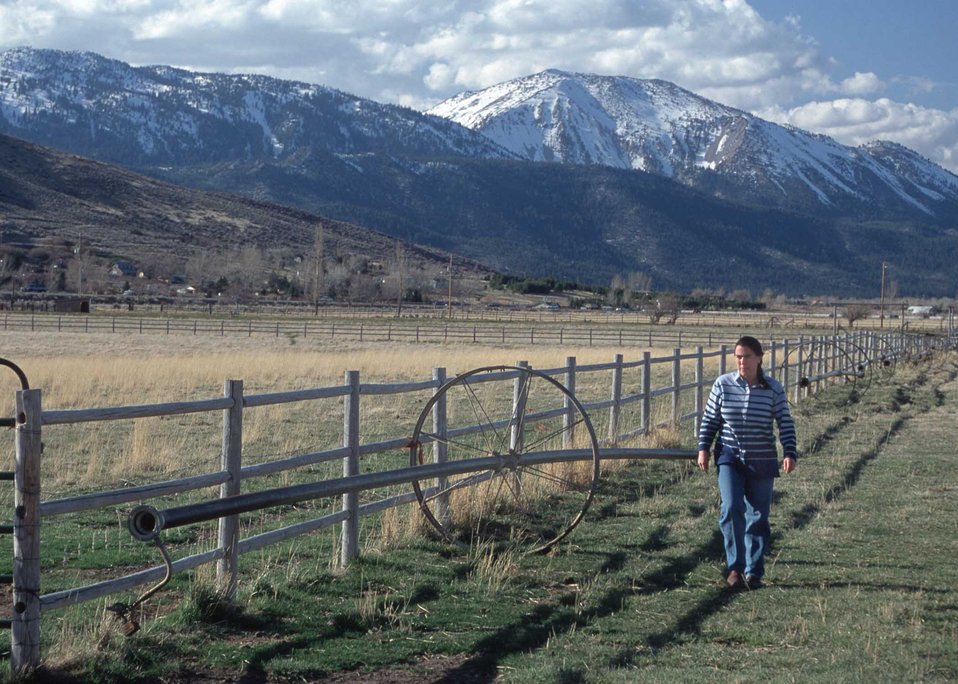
ranchers depend on the snowpack to irrigate their pastureland, Washoe County, NV.